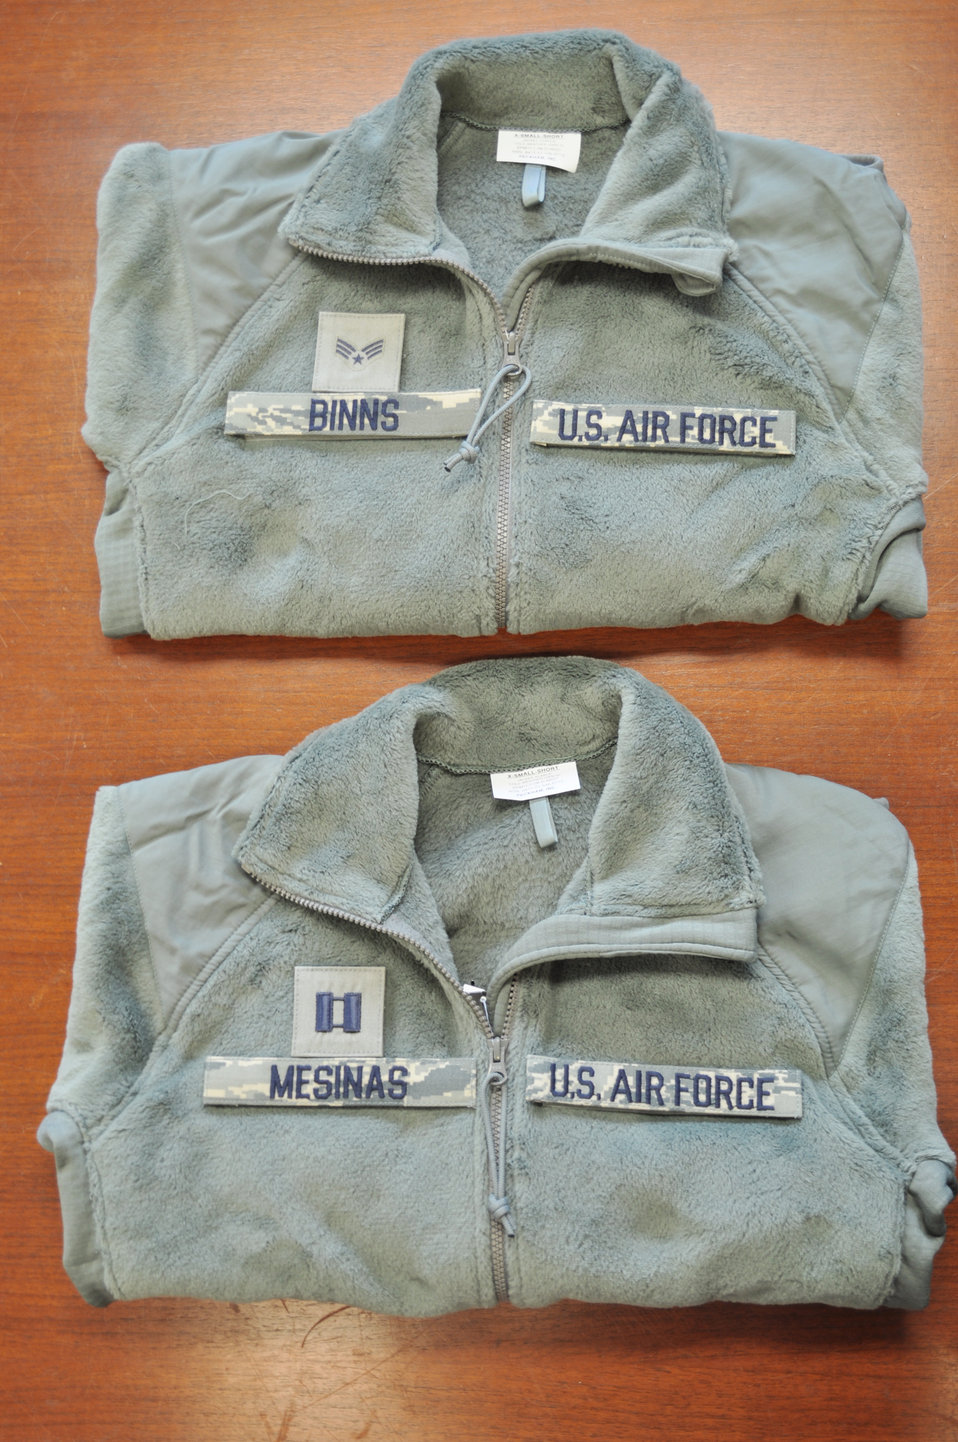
Air Force officials release fleece wear policy

Pictured are sage green fleece outer garments with proper placement of name and rank tapes. Members of the 98th Air Force Virtual Uniform Board released a policy message for wearing the new Air Force sage green fleece as an outer garment for the airman battle uniform.